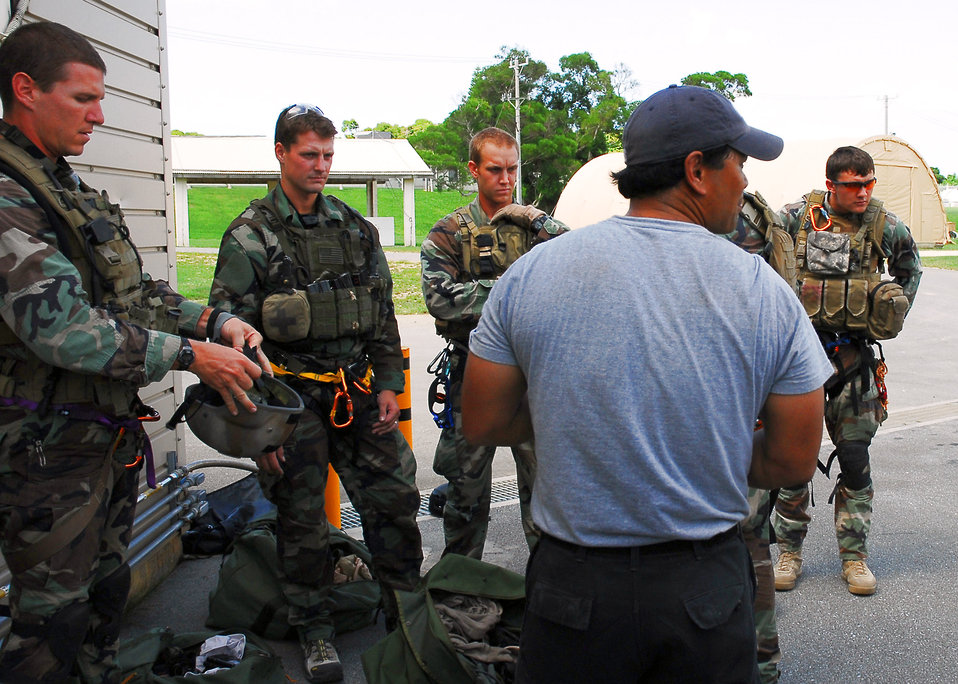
Confined-space training

Members of the 31st Rescue Squadron at Kadena Air Base, Japan, prepare for an exercise scenario during confined-space training Oct. 3. The training prepares them to execute rescue operations in confined spaces and collapsed structures.